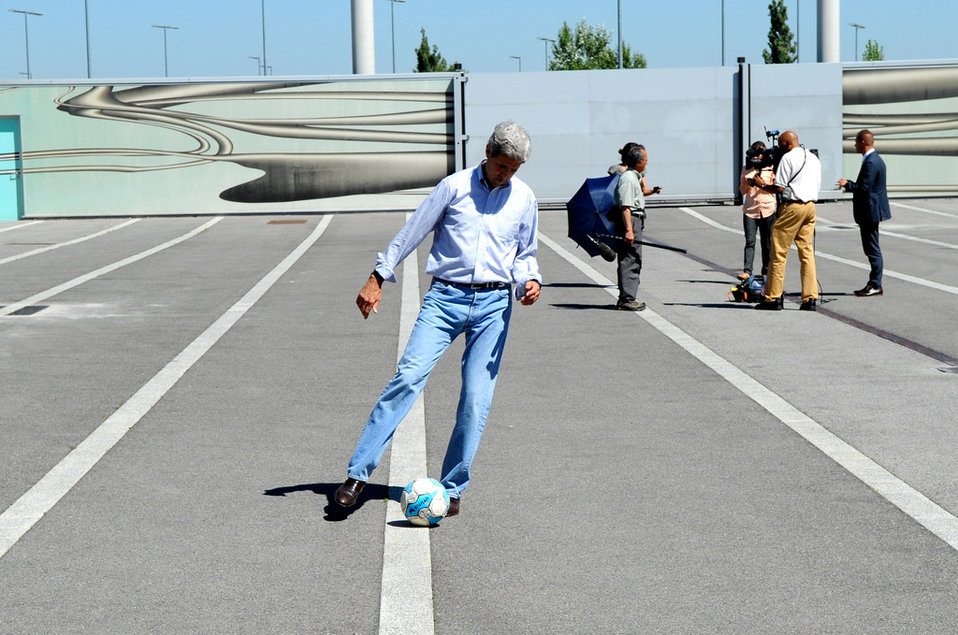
Secretary Kerry Practices His Soccer Skills

U.S. Secretary of State John Kerry, a college soccer player, plays with a soccer ball during a refueling stop in Vienna, Austria, on August 2, 2013.